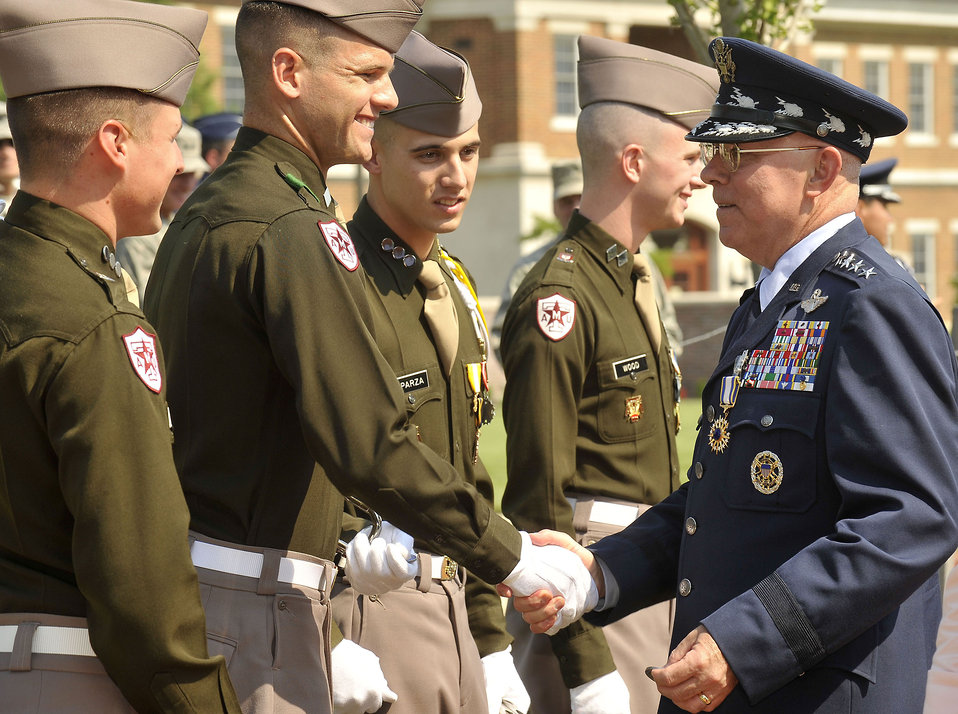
CSAF Retirement Ceremony

Air Force Chief of Staff Gen. T. Michael Moseley thanks cadets from his alma mater, Texas A&M University, who paid tribute to him during his retirement ceremony July 11 at Bolling Air Force Base, D.C.